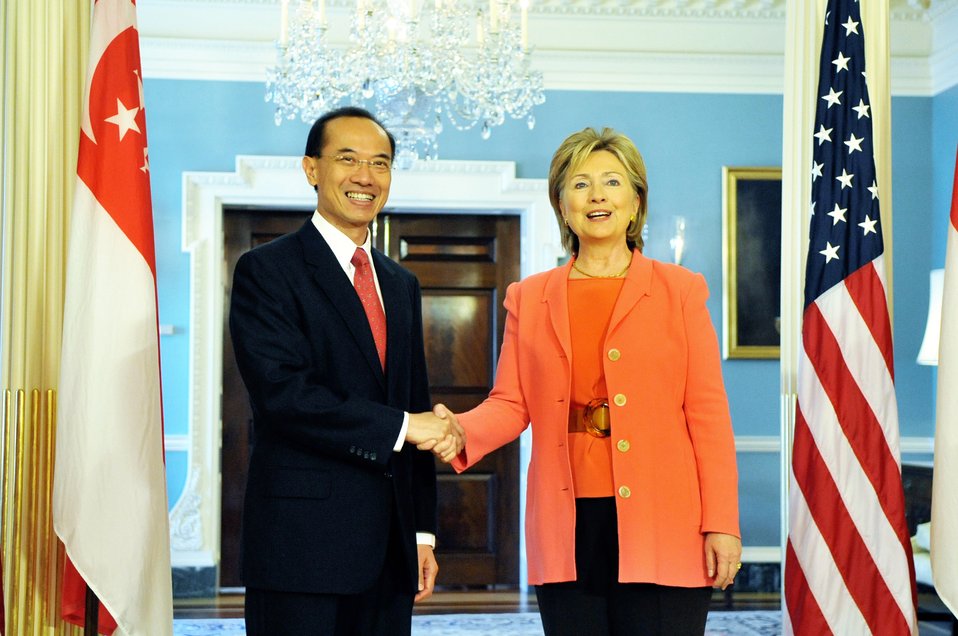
Secretary Clinton Meets With Singapore Foreign Minister

U.S. Secretary of State Hillary Rodham Clinton shakes hands with Singaporean Foreign Minister George Yeo after speaking to reporters before their meeting at the State Department in Washington, DC April 27, 2009.